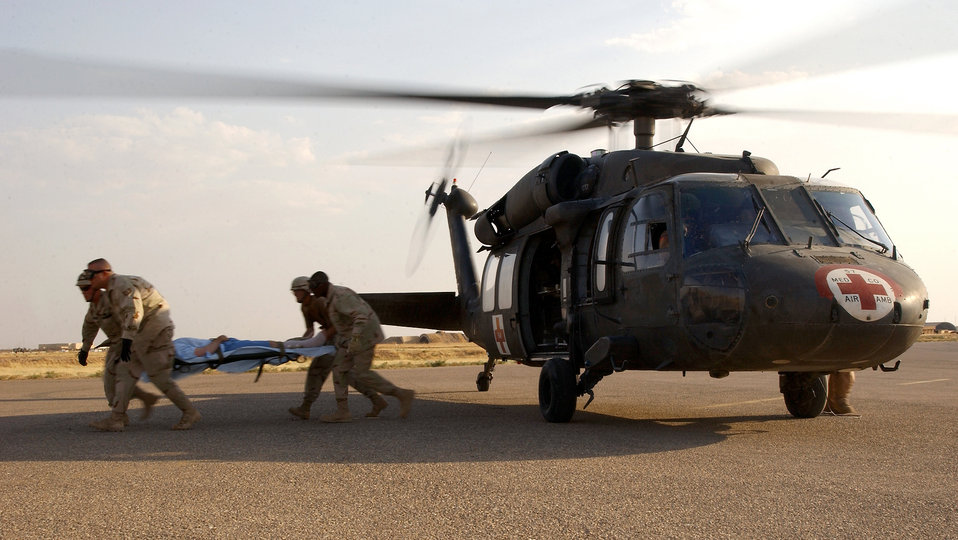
Medivac

KIRKUK AIR BASE, Iraq -- Airmen from the 506th Expeditionary Medical Squadron carry an injured soldier from an Army UH-60 Black Hawk helicopter Aug. 22. Several injured soldiers were moved from Tikrit, Iraq, and flown out of the country for treatment.